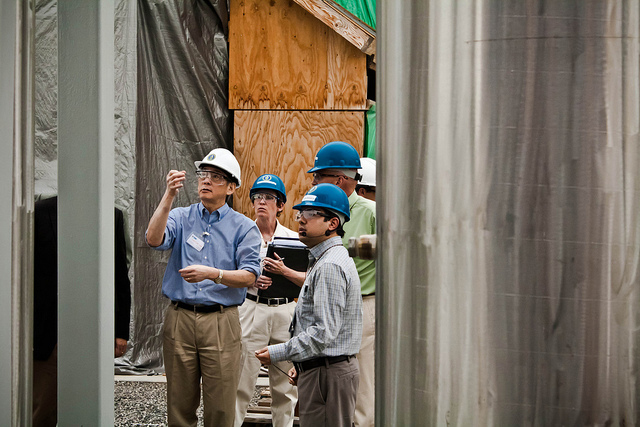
DOE Secretary Chu Tours Hanford's Large Scale Integrated Test Facility

Department of Energy Secretary Chu tours the Hanford Site's Large Scale Integrated Test Facility.